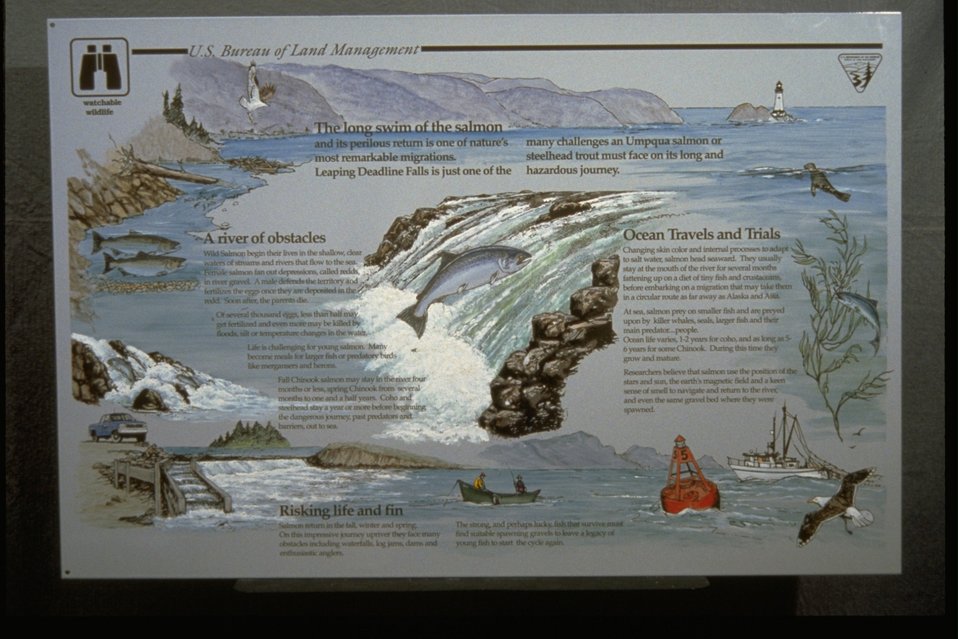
Close-up of the interpretive panel at Deadline Falls.